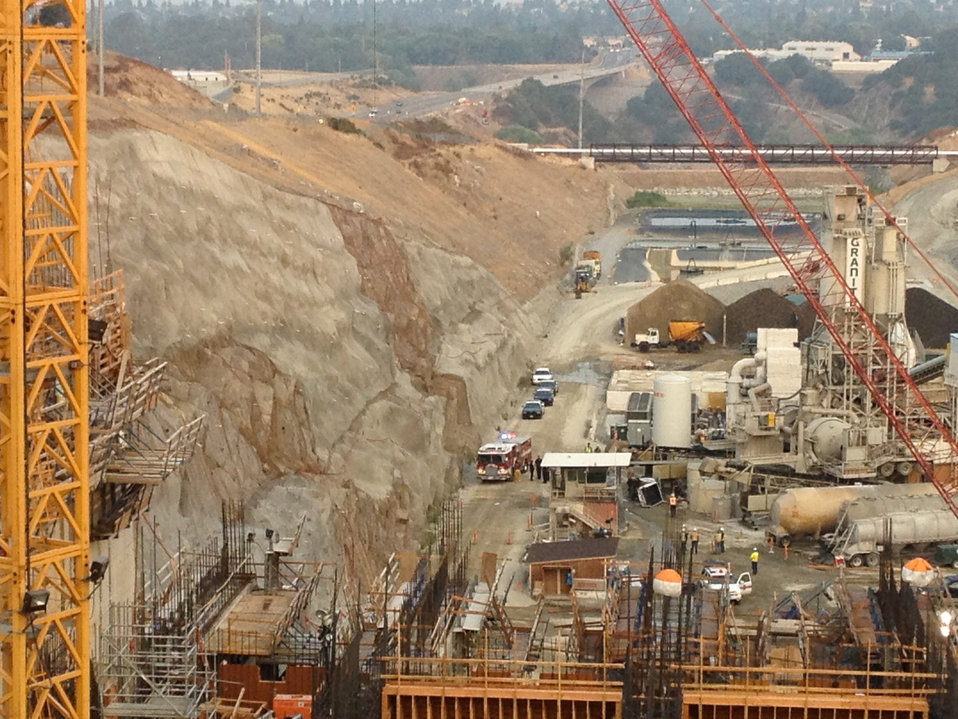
Vehicle plunges into Folsom Dam spillway construction site

Emergency personnel respond to the scene after a vehicle, shown at center, plunged more than 100 feet into the Folsom Dam auxiliary spillway project construction site in Folsom, Calif., July 30, 2013. Employees of the project contractor, Granite Construction Inc., were the first to respond to the incident and safely extracted the driver from the vehicle. An electrical cable supplying power to the project was the only damage to the construction site. Work is expected to resume during the evening of July 30.